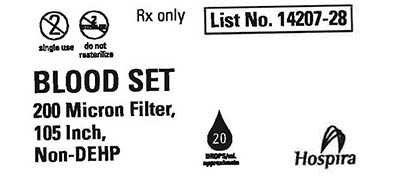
RECALLED – Blood sets used for the administration of blood and blood products

August 13, 2013 – Product Recall – Hospira Issues Important Safety Information for Blood Sets.